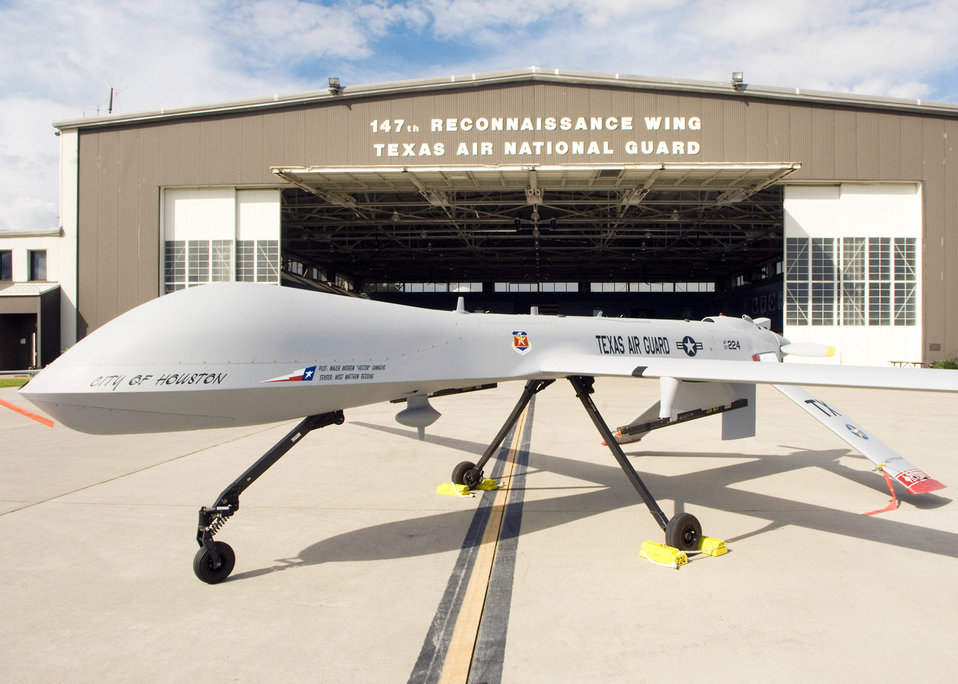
MQ-1B accident report

Officials released the MQ-1B Predator accident report Aug. 20,2010, regarding the April 20, 2010, crash of a Predator, similar to the one pictured above. The remotely piloted aircraft was flying a training mission at Southern California Logistics Airport.